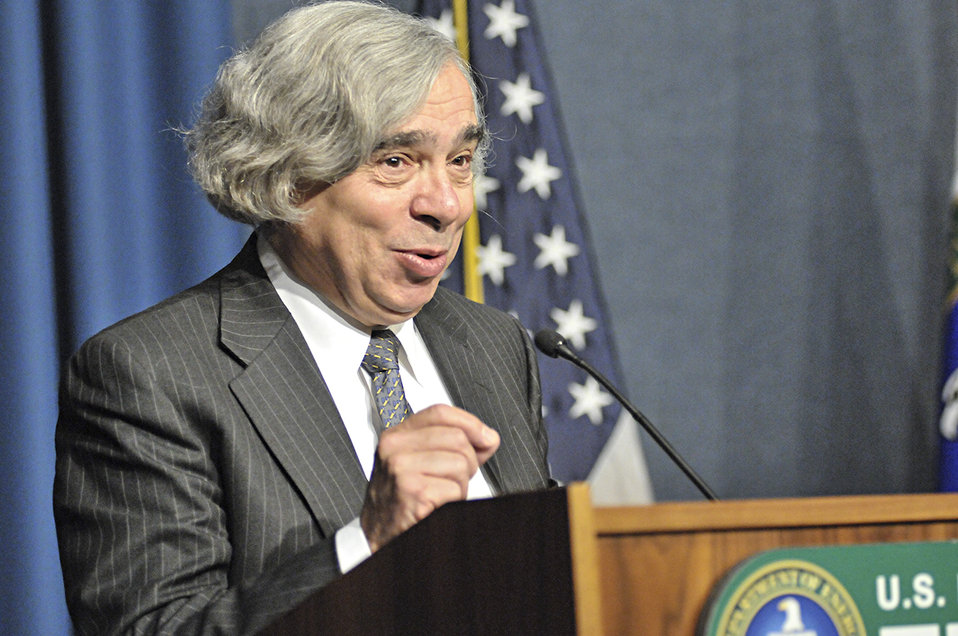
Launching the Minorities in Energy Initiative

Secretary Ernest Moniz introduces the Minorities in Energy Initiative. The Office of Economic Impact and Diversity kicked off the Minorities in Energy Initiative on September 24, 2013.